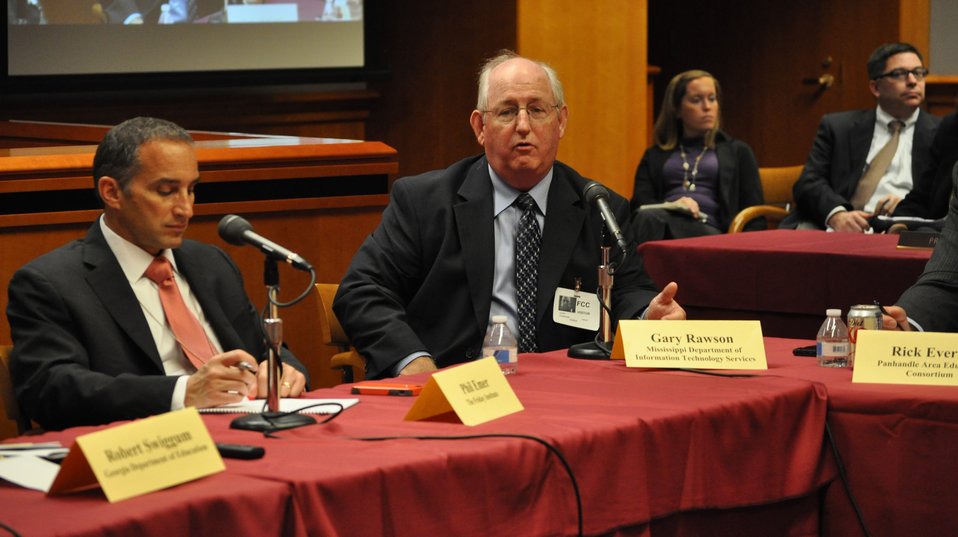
5.6.2014 E-Rate Modernization Workshop

Education and Library Technology Experts Roundtable: Enabling the Lowest “E-rate” for Schools and Libraries